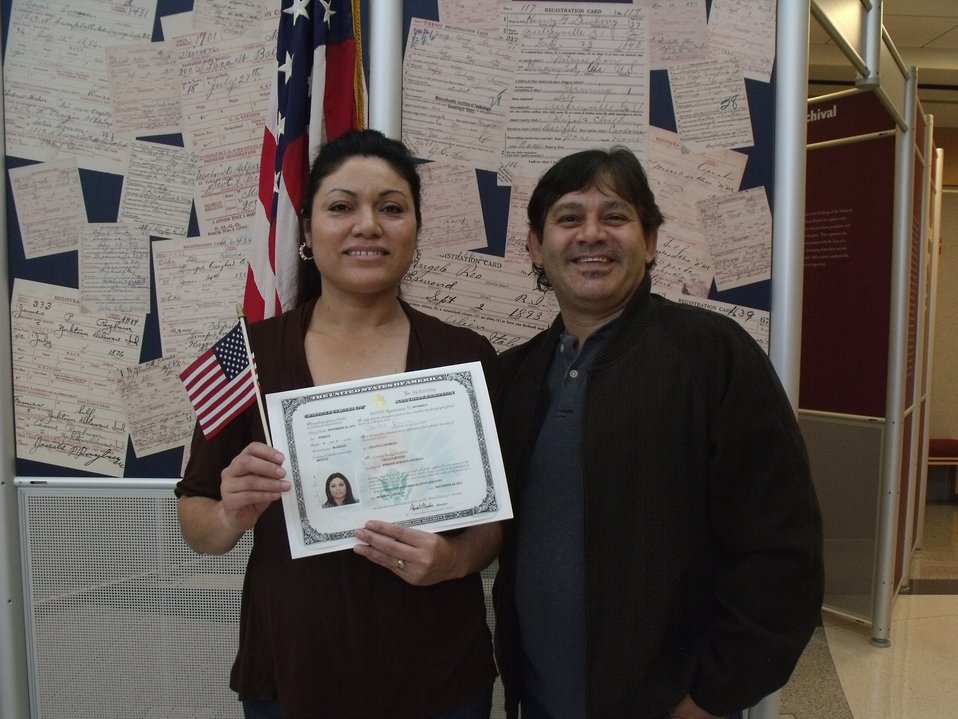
New Citizens